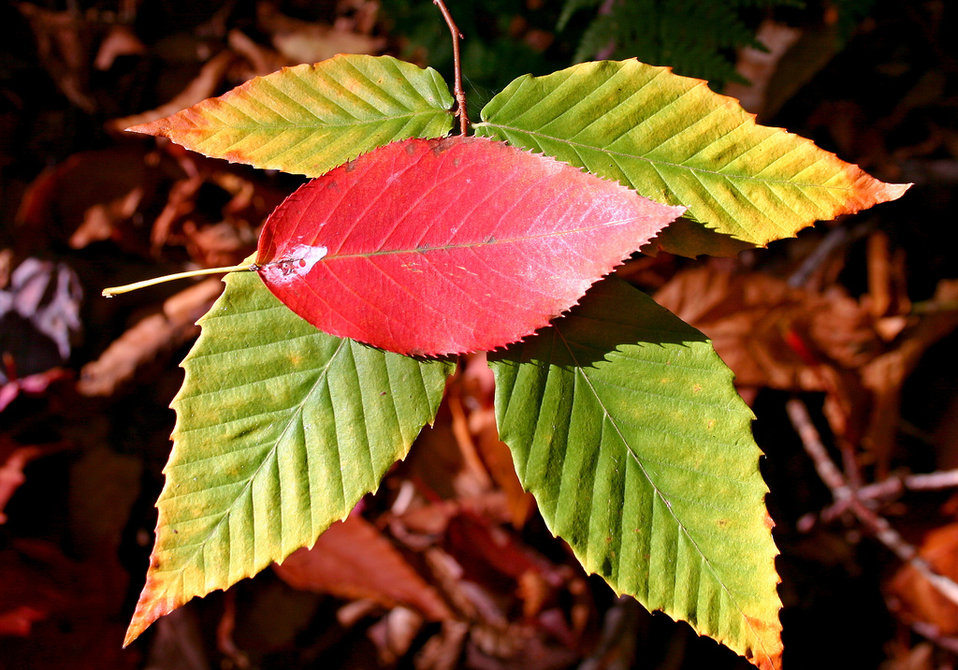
Beech and Birch

American beech and yellow birch leaves in fall colors.